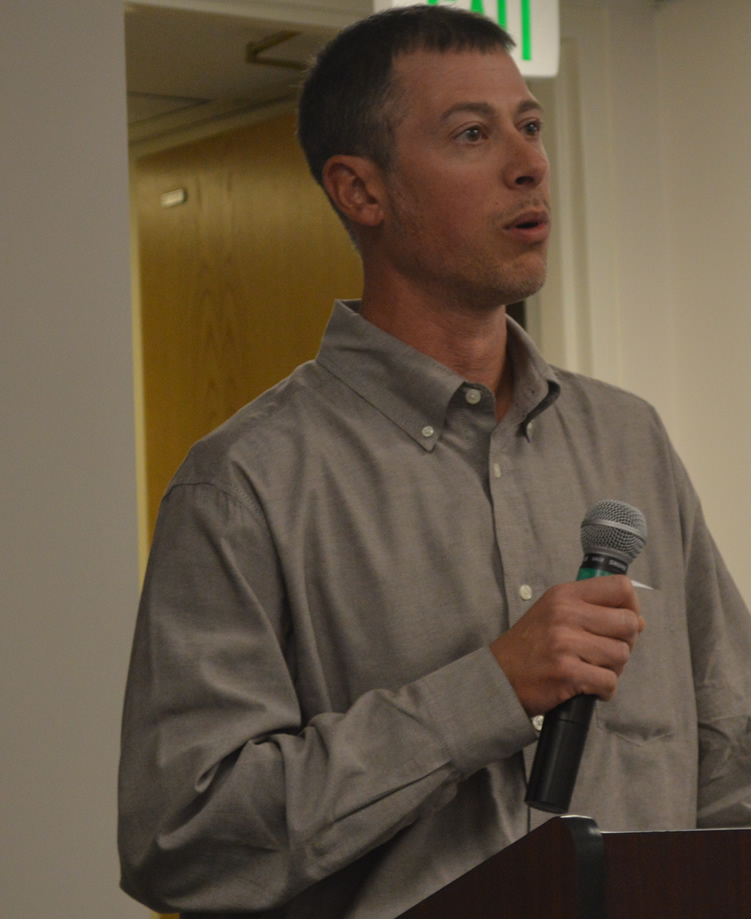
Regional Director Steve Guertin Moves on to Senior Leadership Position

On November 1, 2012, USFWS Mountain-Prairie Regional Director, Steve Guertin, served his last day as Regional Director before moving on to a senior leadership position at Headquarters.

Regional leadership and partners shared their memories of Steve's outstanding leadership and his unique ability to leverage his outstanding technical skills while maintaining a very personable persona - all amidst a variety of challenging issues.